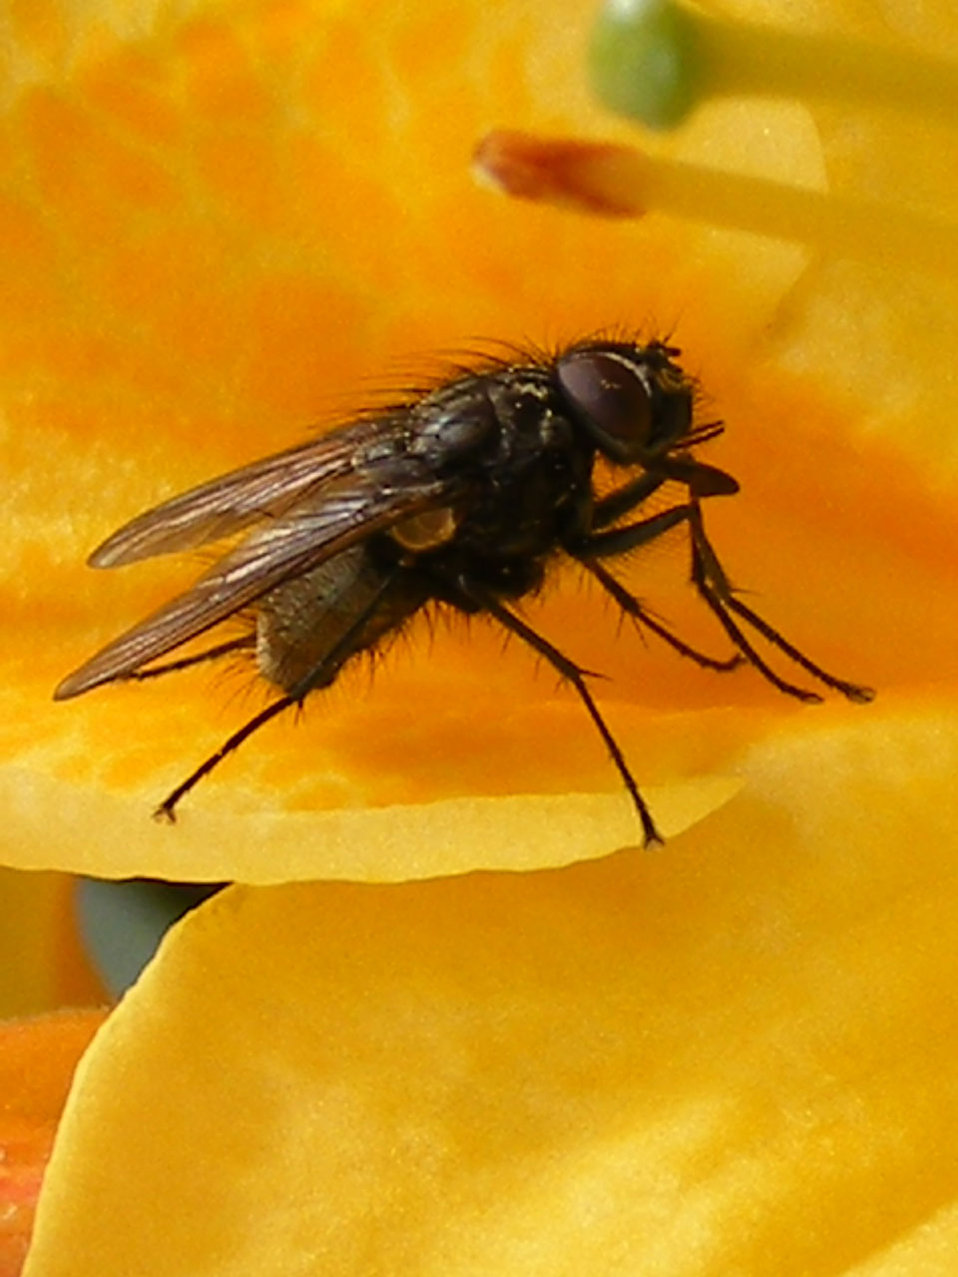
Fly resting on petal.